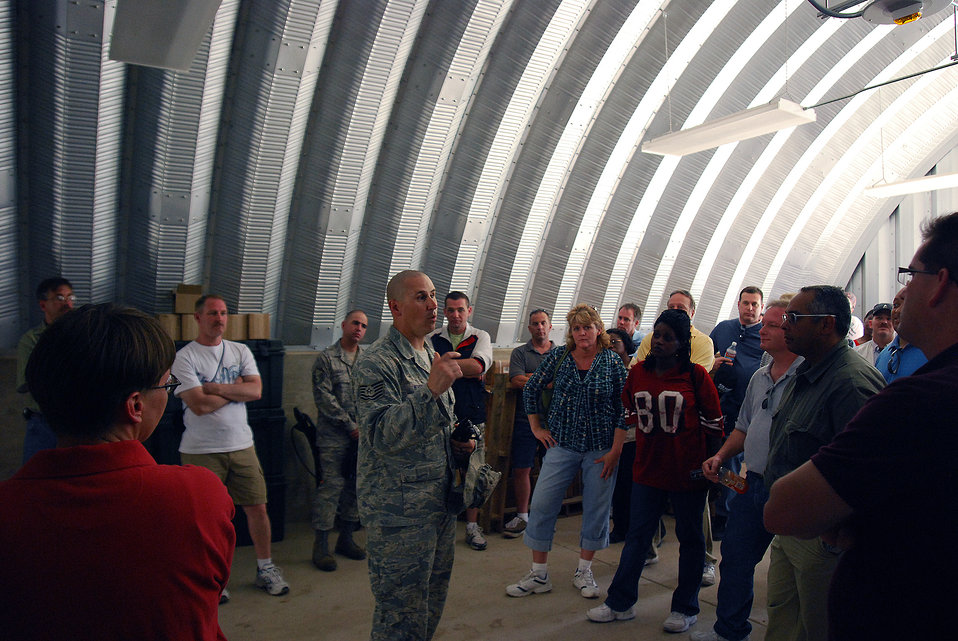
Retired airmen called back to duty

Retired Air Force majors and master sergeants take part in the 2009 Push-Pull exercise at Lackland Air Force Base, Texas. The exercise tested the ability of Air Force officials to recall retired Airmen with specific skills should their expertise be needed in the future.